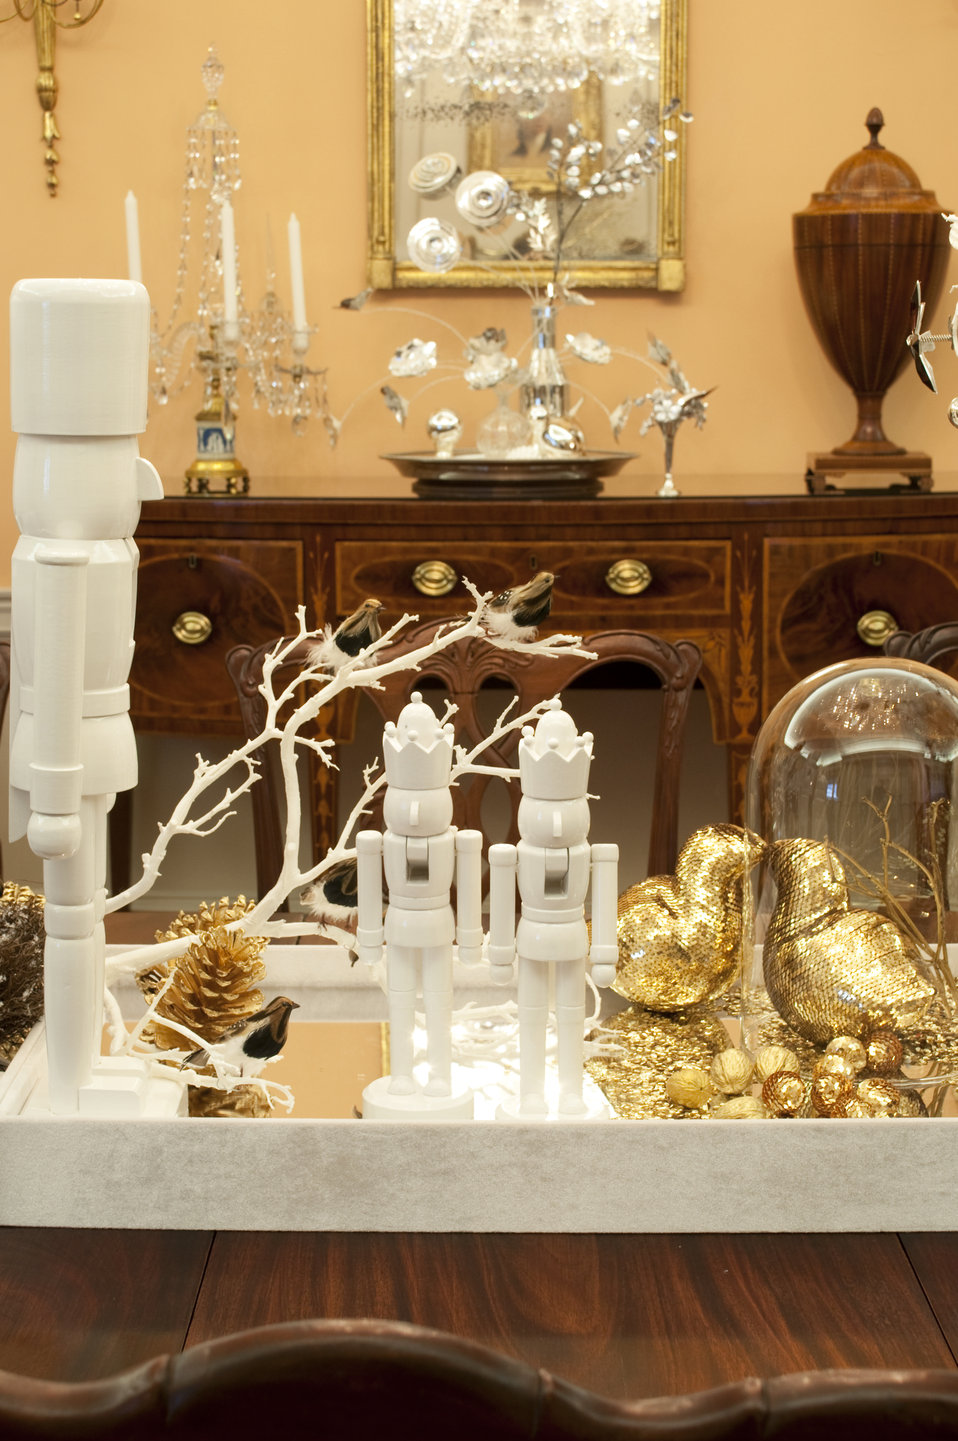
The U.S. Department of State Partners With Time Inc. and InStyle To Decorate the James Monroe Reception Room

The U.S. Department of State partners with Time Inc. and InStyle to decorate the Diplomatic Reception Rooms for the Holidays in December 2010. Pictured in this photo is the James Monroe Reception Room.